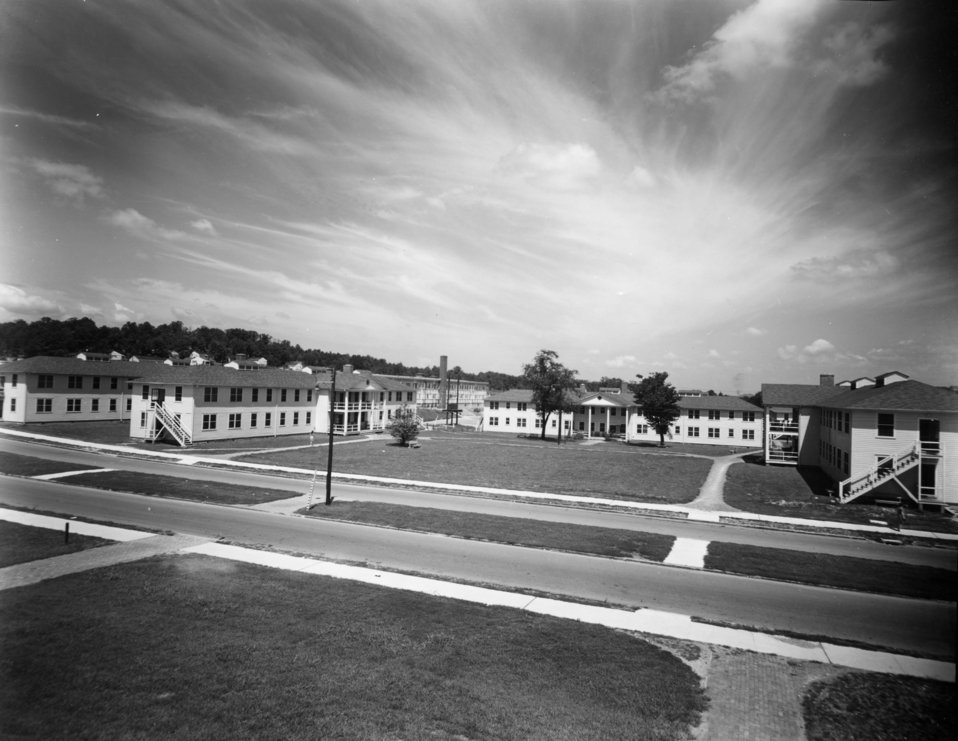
Housing at Oak Ridge